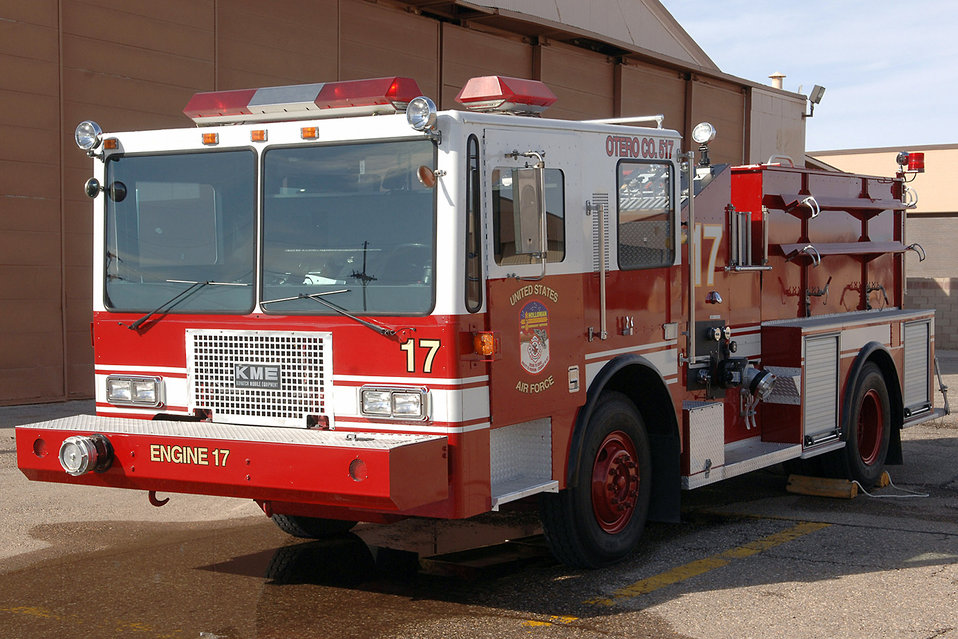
Holloman units combine to refurbish fire truck

In this photo from 2007, the previous fire truck could only carry a crew of three to four people and a hose line at Holloman Air Force Base, N.M. The truck was very limited on the amount of equipment it could store. With the ability to carry a larger crew and store more equipment, the new truck is able to respond to a wider variety of emergencies, now doing the job that once took two trucks to complete.